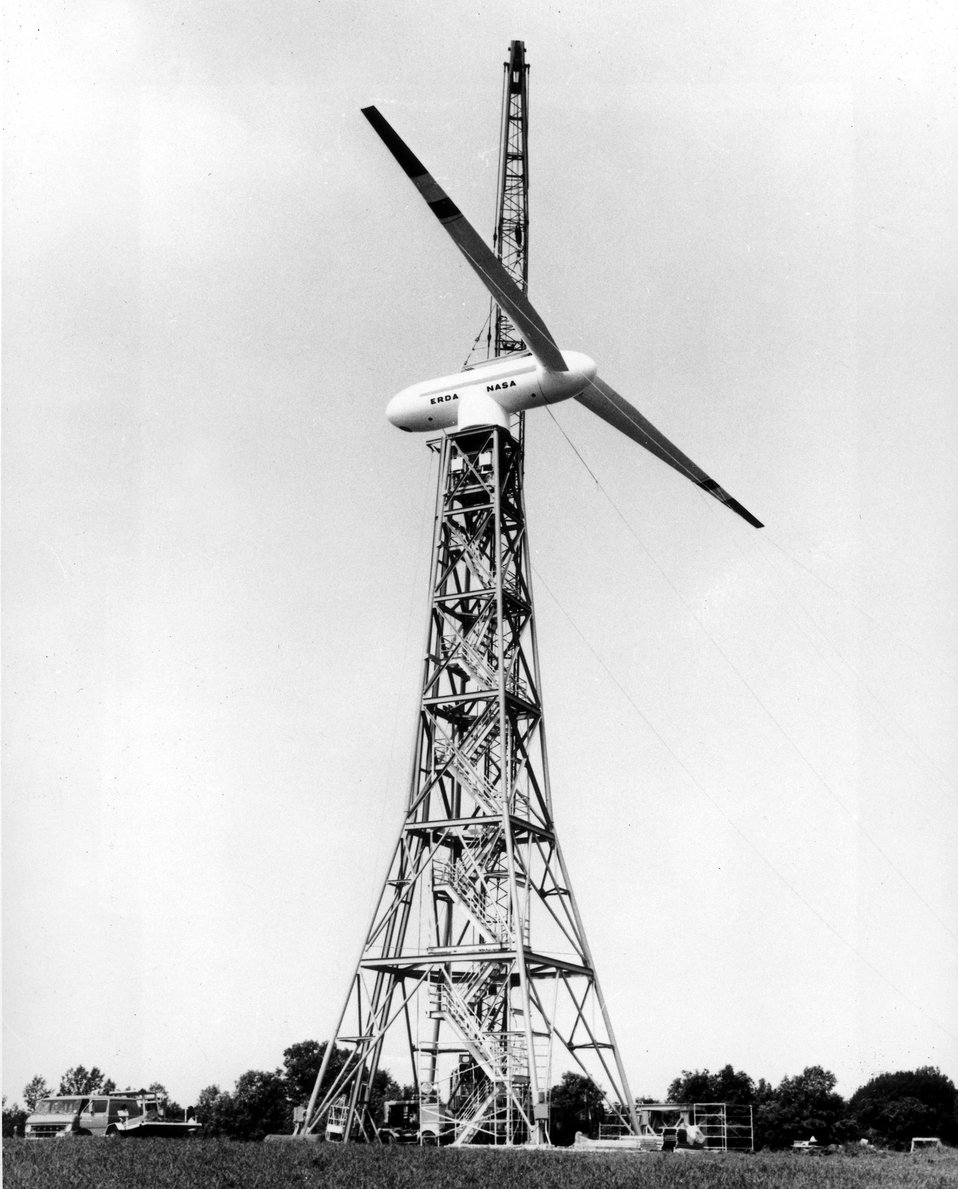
A 125-foot-tall windmill has been developed for the U.S. Department of Energy (DOE) by NASA's Lewis Research Center in Cleveland, Ohio. c. 1975